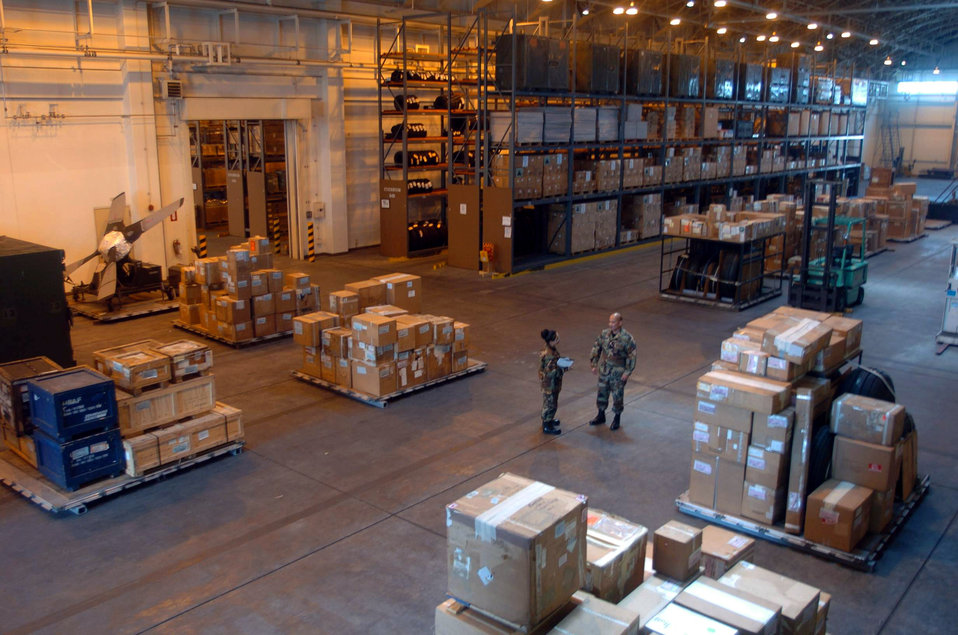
Inventory management

YOKOTA AIR BASE, Japan - Tech. Sgt. Rex Sarmiento (right) and Airman 1st Class Amadel Aspiras discuss equipment storage procedures during an inspection here. Both Airmen are inventory management technicians assigned to the 374th Logistics Readiness Squadron's aircraft parts store element.